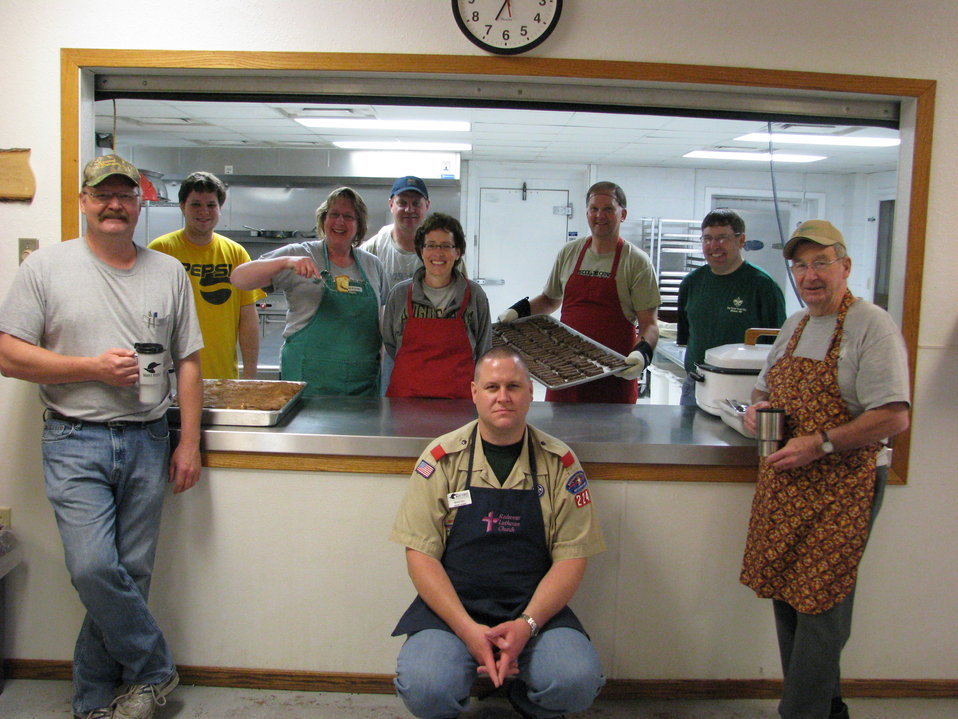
Support Staff

A group of volunteers kept the hard-working Boy Scouts well fed.